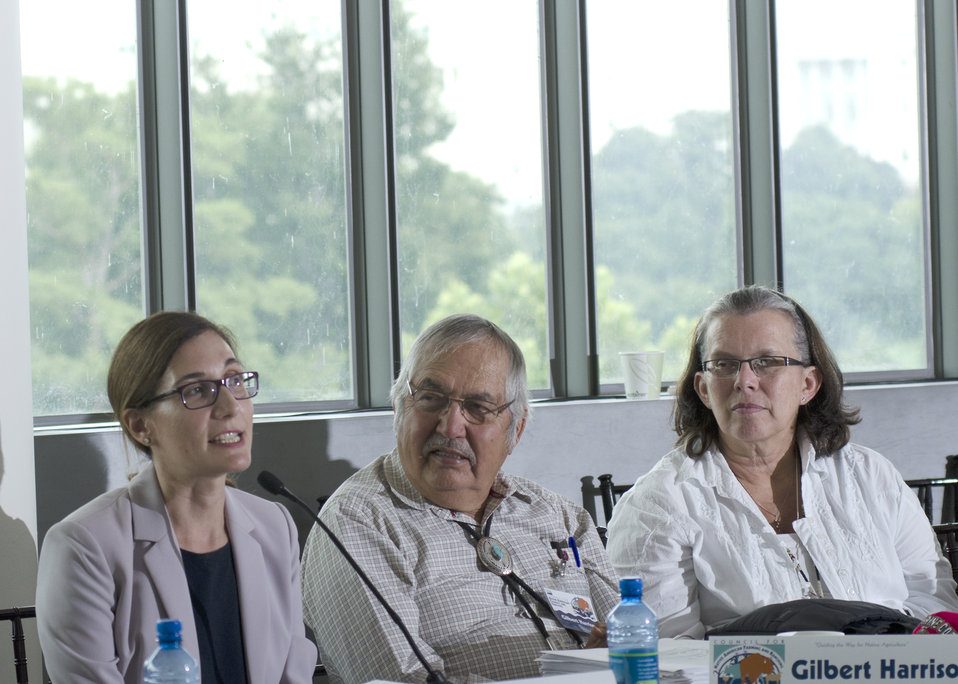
U.S. Department of Agriculture (USDA) Acting Deputy Assistant Secretary Office of Civil Rights Lisa Pino (left) speaks while Rancher of the Navaho Nation in Shiprock, NM Gilbert Harrison and USDA Senior Advisor to the Secretary for Tribal Relations Janie Simms Hipp, Chickasaw Nation, listen at the conclusion of the first business meeting of USDA’s Council for Native American Farming and Ranching (CNAFR) held at the National Museum of the American Indian in Washington, D.C., on Wednesday, Aug. 15, 2012. CNAFR was created to advise the Secretary on ways to eliminate barriers to participation for Native American Farmers and Ranchers in USDA programs. The Council was established as part of the Keepseagle settlement, and is conducted under the oversight of USDA's Office of Tribal Relations under the Office of the Secretary of Agriculture.